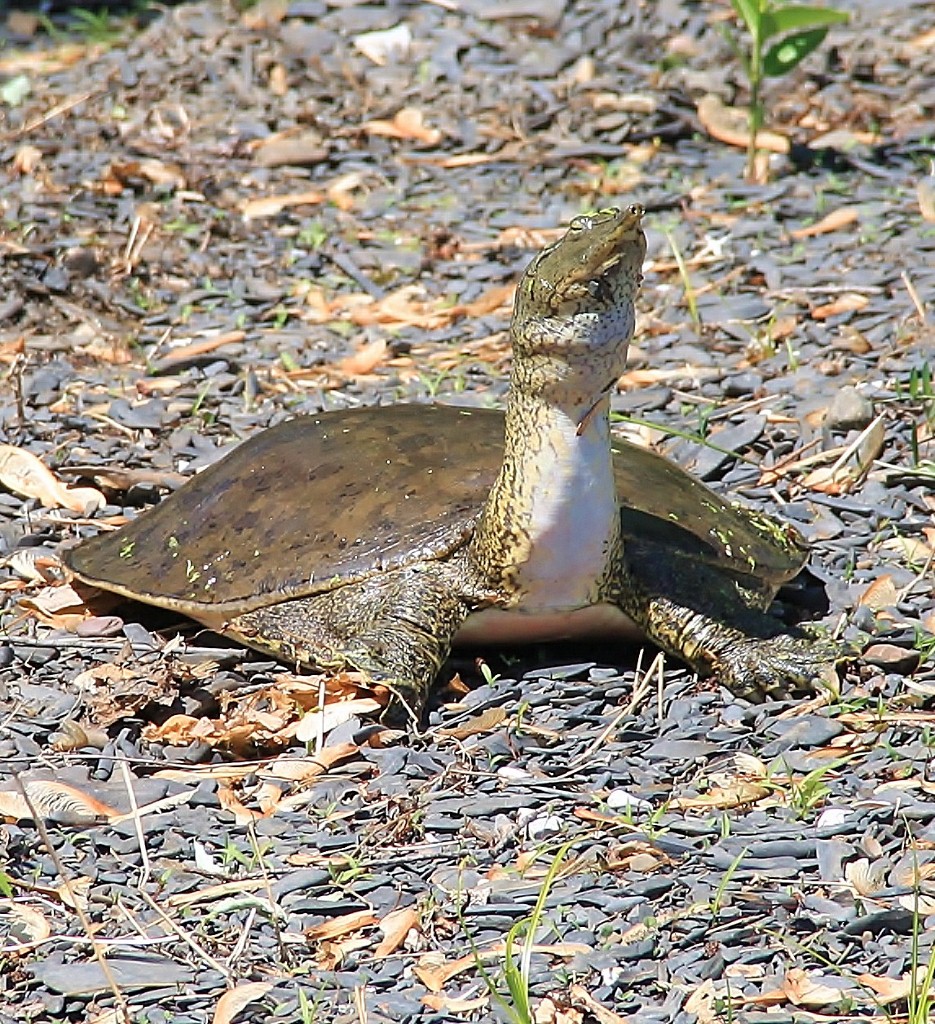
Spiny Softshell Turtle

Missisquoi National Wildlife Refuge Spiny Soft shell turtle